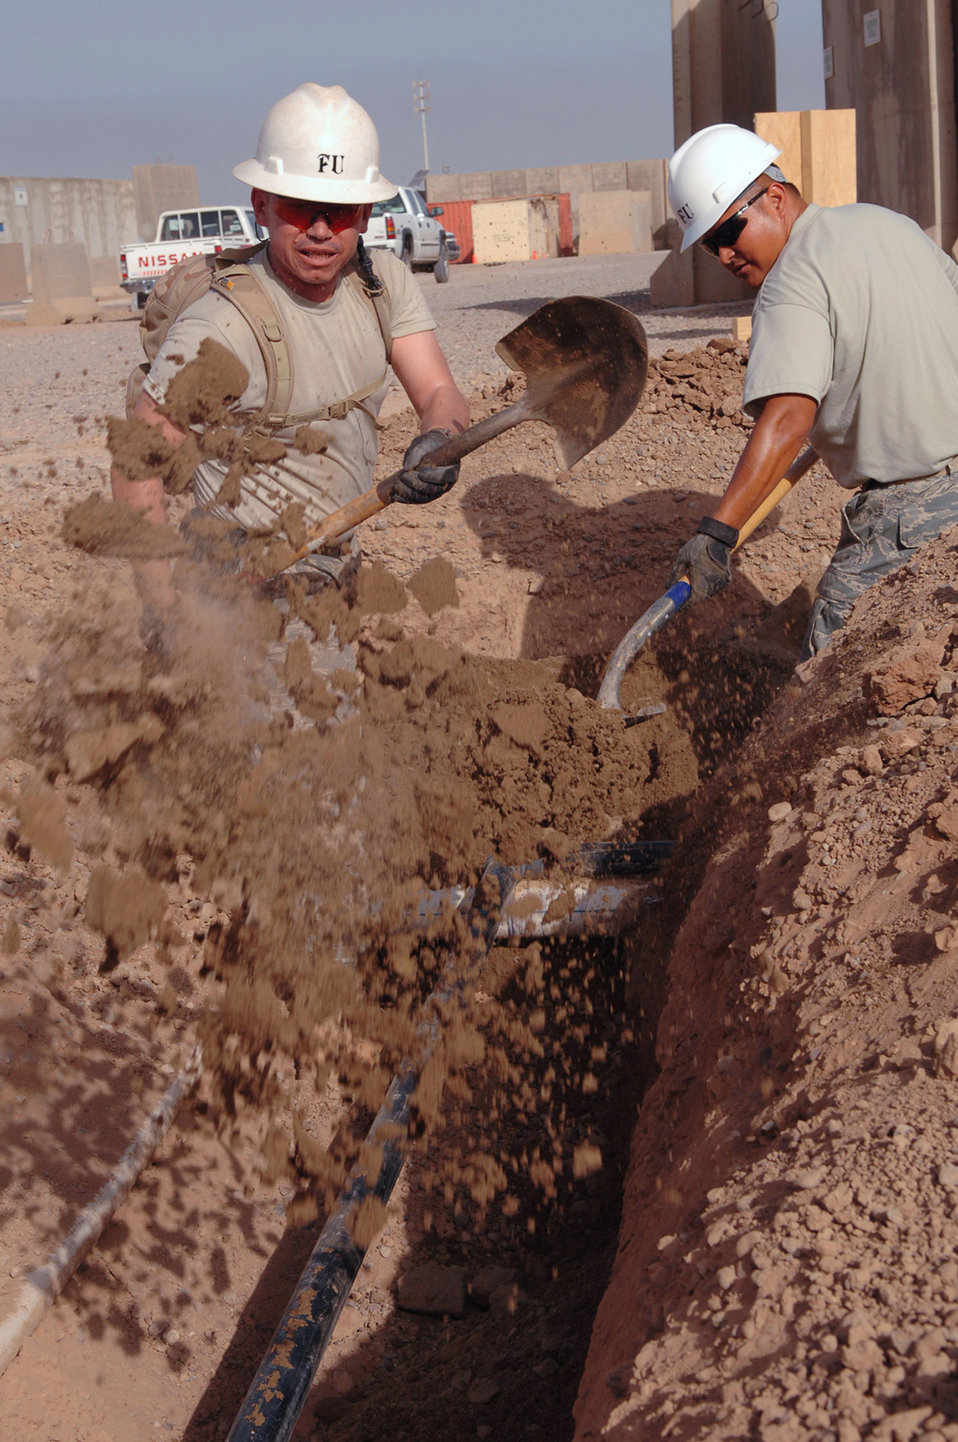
Water engineering

Senior Airmen Antonio Martinez and Juan Reynoso shovel soft sand over new piping March 24 at Balad Air Base, Iraq. The sand will protect and cushion the newly installed pipes in the Air Force housing area from rocks. The pipe infrastructure replacement project is scheduled to be completed by mid-June. Both Airmen are 332nd Civil Engineer Squadron fuels and utilities plumbers deployed from Peterson Air Force Base, Colo.